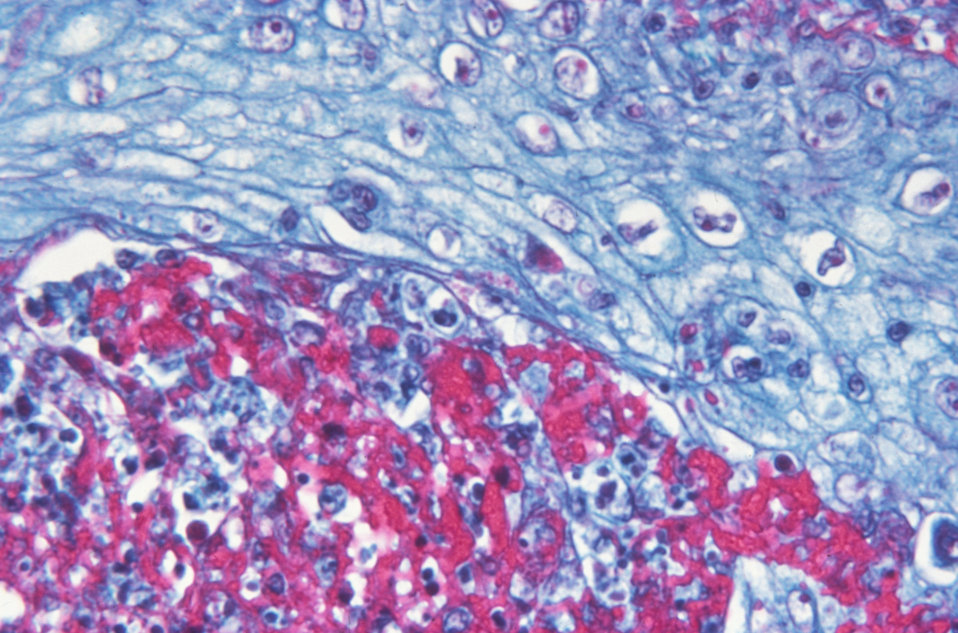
This micrograph reveals the histologic changes in human skin that has been infected with the smallpox variola virus.